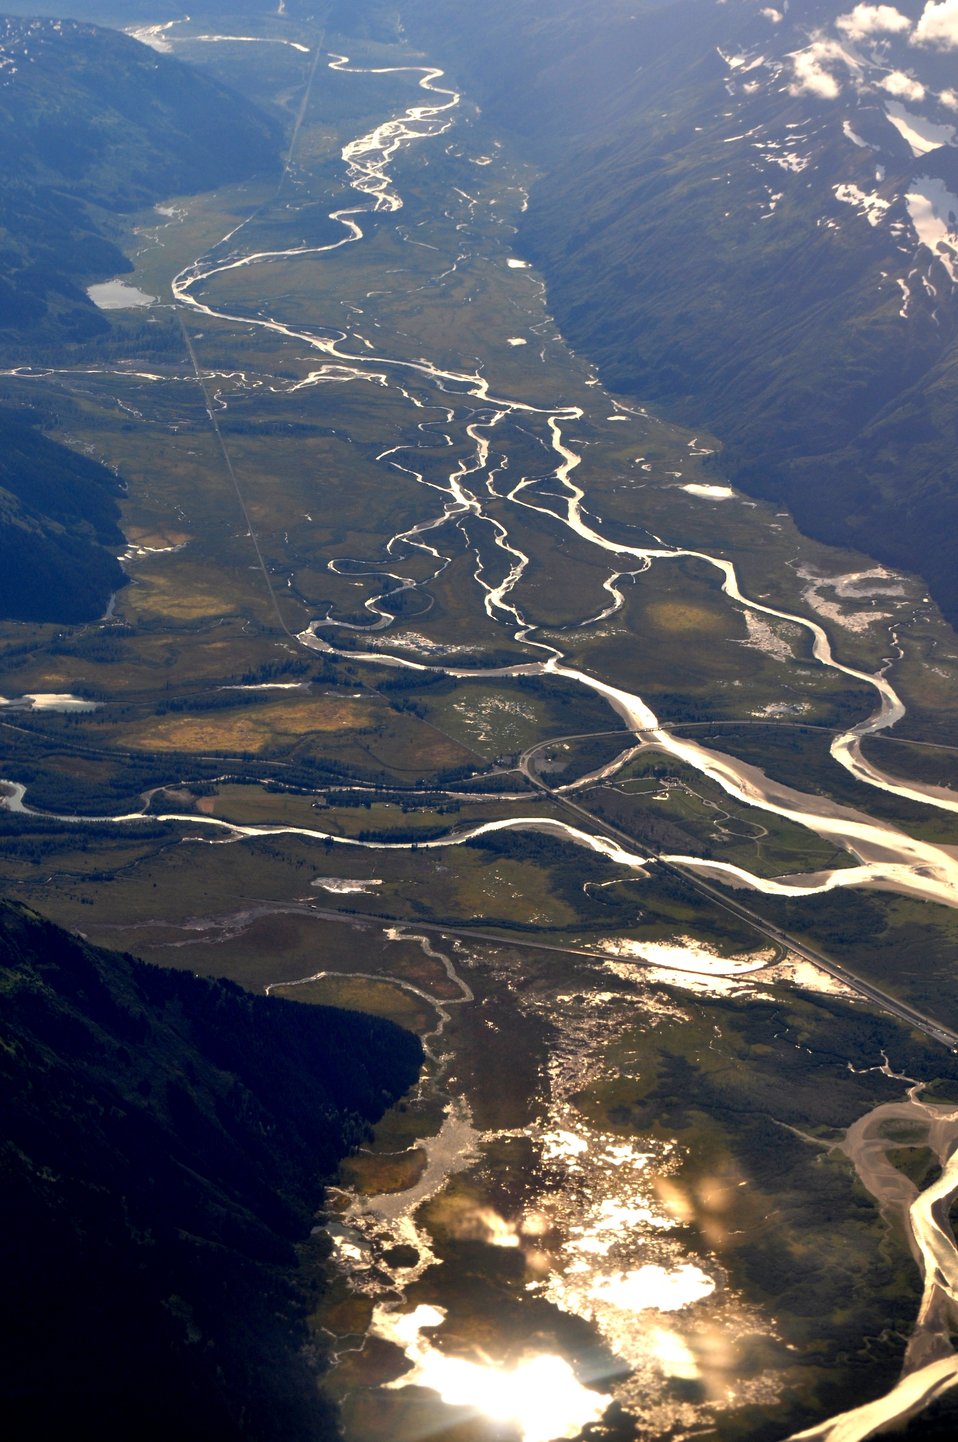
Junction of Portage Glacier Road and Seward Highway. Bridges cross over Placer River. Shiny area at bottom of photo is east end of Turnagain Inlet.